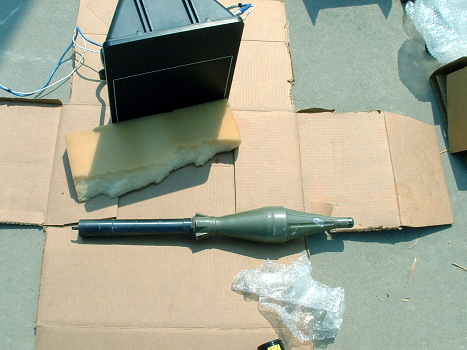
Suspected contraband

EGLIN AIR FORCE BASE, Fla. - Officials have preferred charges against Maj. Gregory McMillion after an investigation found evidence he allegedly shipped contraband items here from an Operation Iraqi Freedom deployment. Major McMillion is assigned to the base's 728th Air Control Squadron.